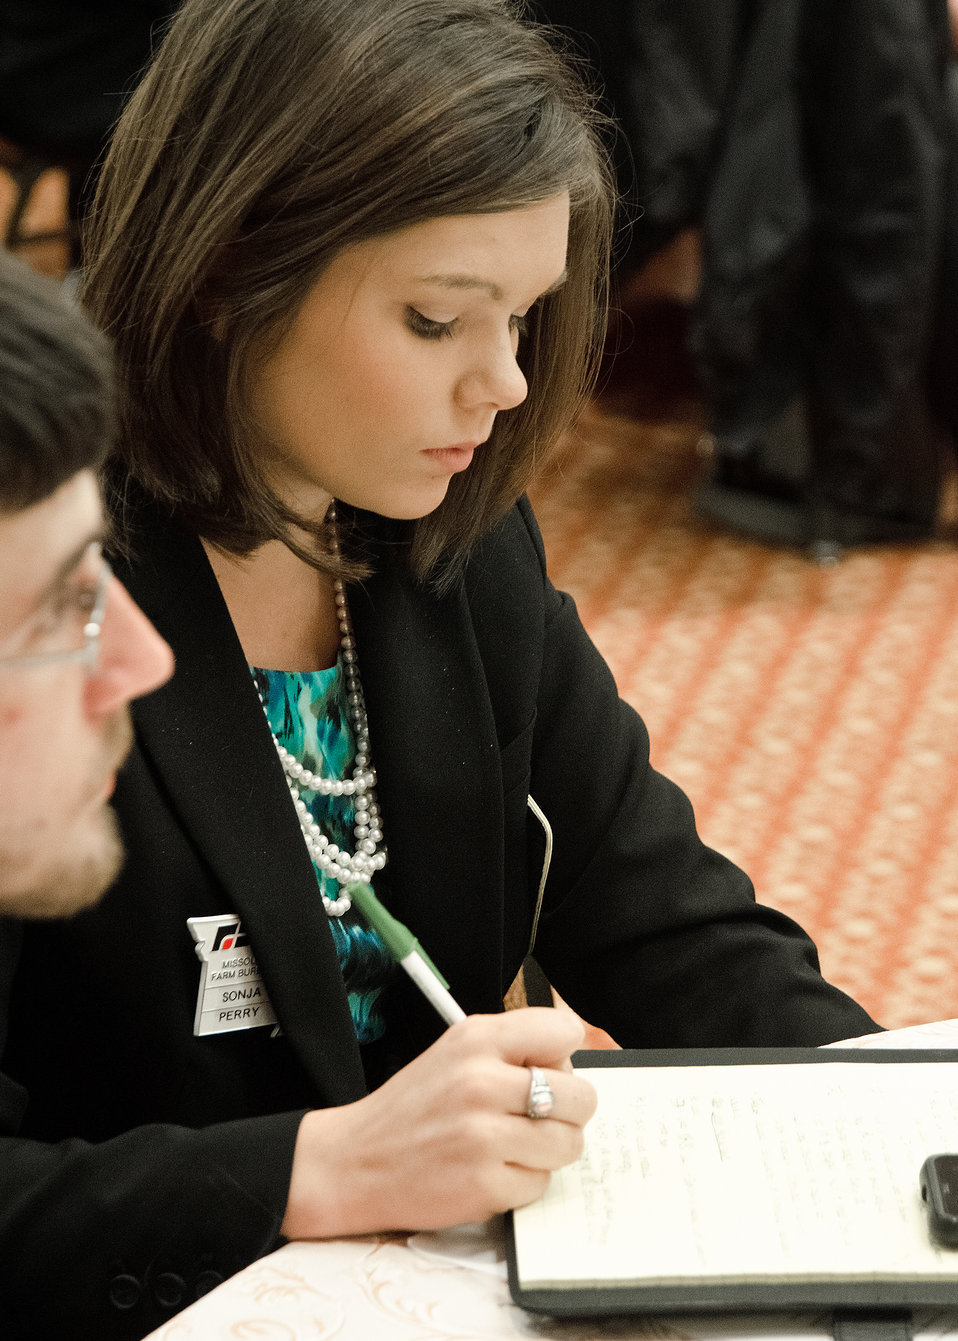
Missouri Farm Bureau Ambassador from Bowling Green, MO, Sonja Perr takes notes during Agriculture Secretary Tom Vilsack’s interview with Agritalk Host Mike Adams at a meeting with the Missouri Farm Bureau in Washington, D.C., on Tuesday, March 20, 2012. Agritalk, The Voice of Rural America is a radio network based in St. Louis, MO, reaching out to the American Mid-West.